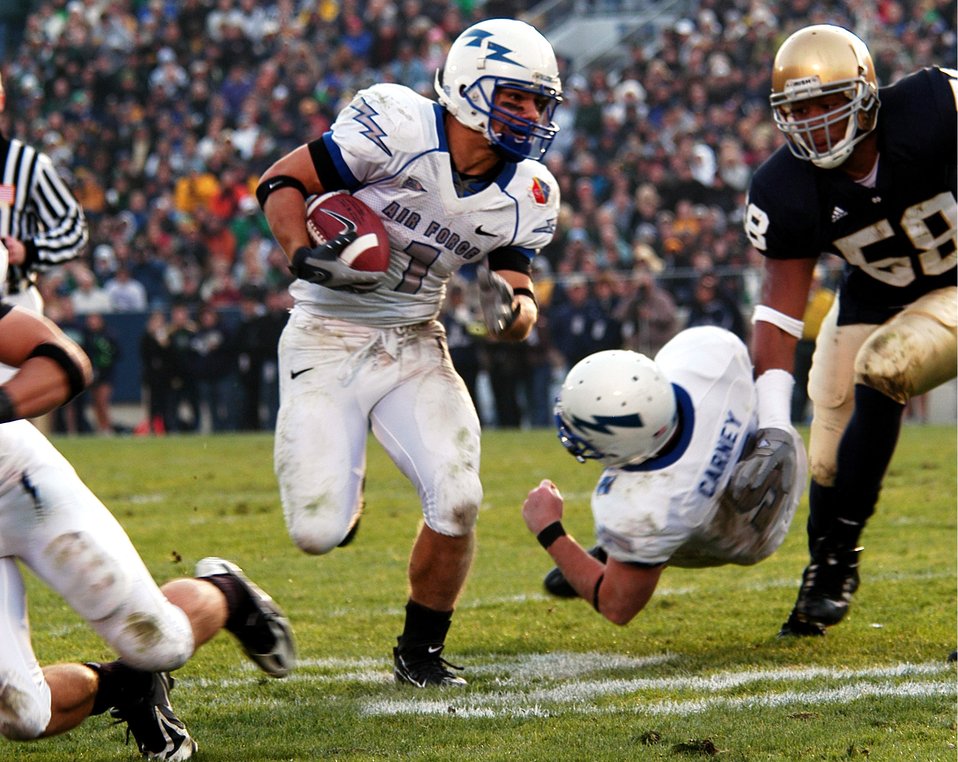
Academy accepts bid to Armed Forces Bowl

U.S. Air Force Academy z-back Chad Hall finds running room thanks to a block by quarterback Shaun Carney during Air Force's 41-24 win over Notre Dame Nov. 10 at South Bend, Ind. U.S. Air Force Academy officials have accepted a bid to play in the Bell Helicopter Armed Forces Bowl on New Year's Eve at Fort Worth, Texas.